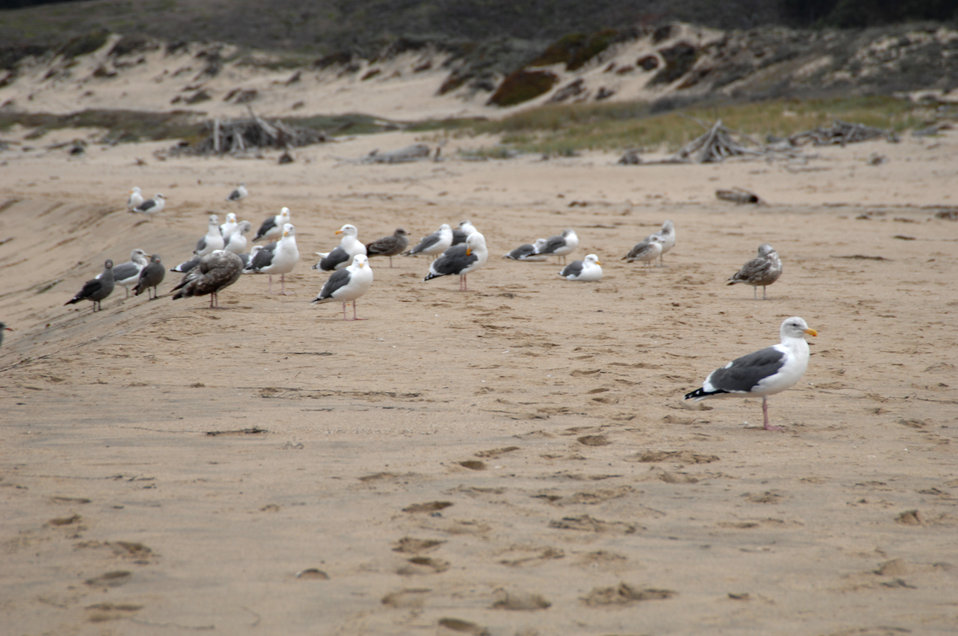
Pescadero Breach Audience

During the manual breaching, the gulls watched the men and women dig.